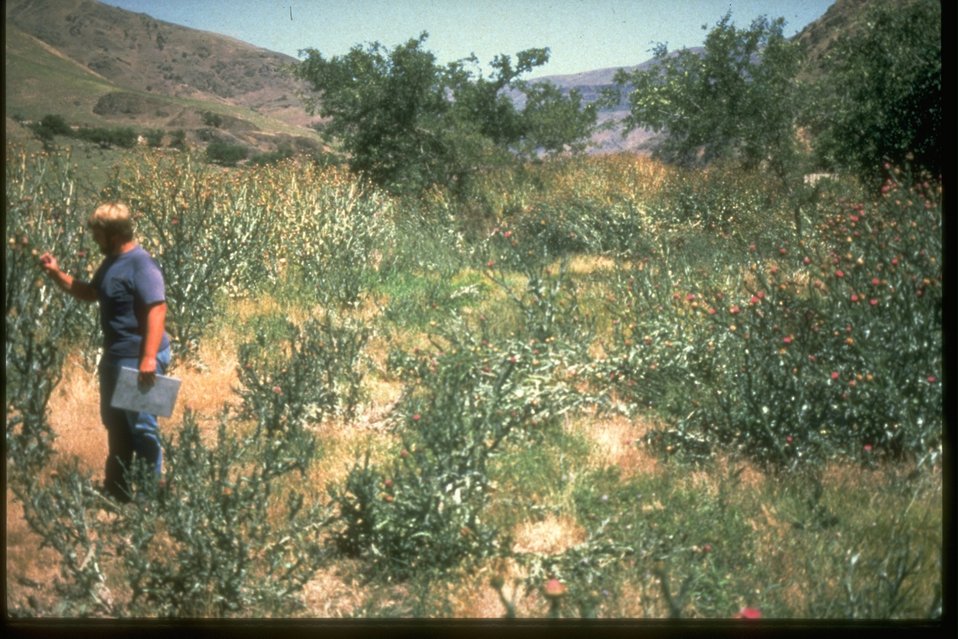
Campground in Snake River abandoned due to Scotch Thistle.